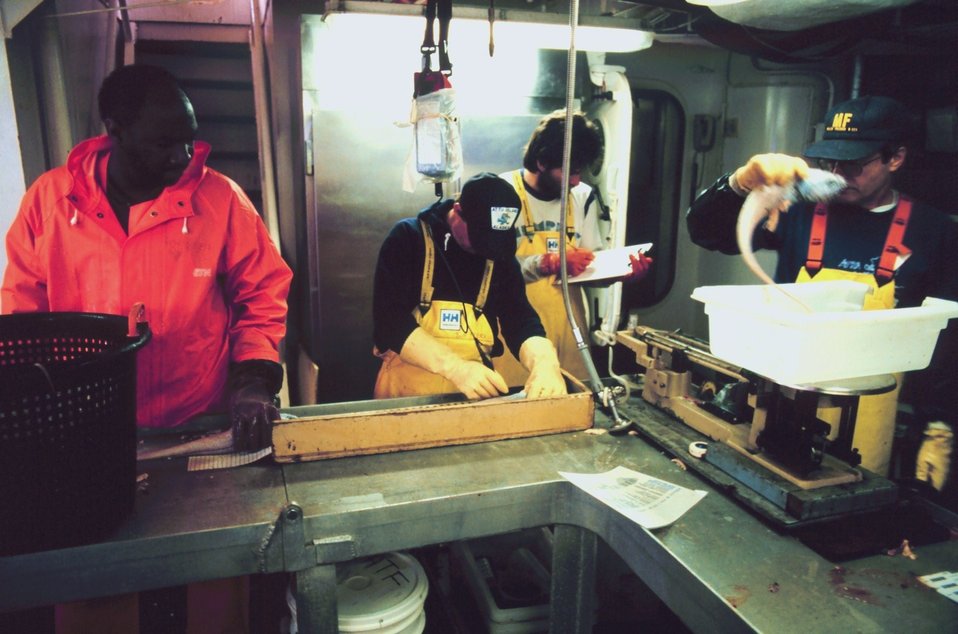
Scientist weighing and measuring fish on the MILLER FREEMAN